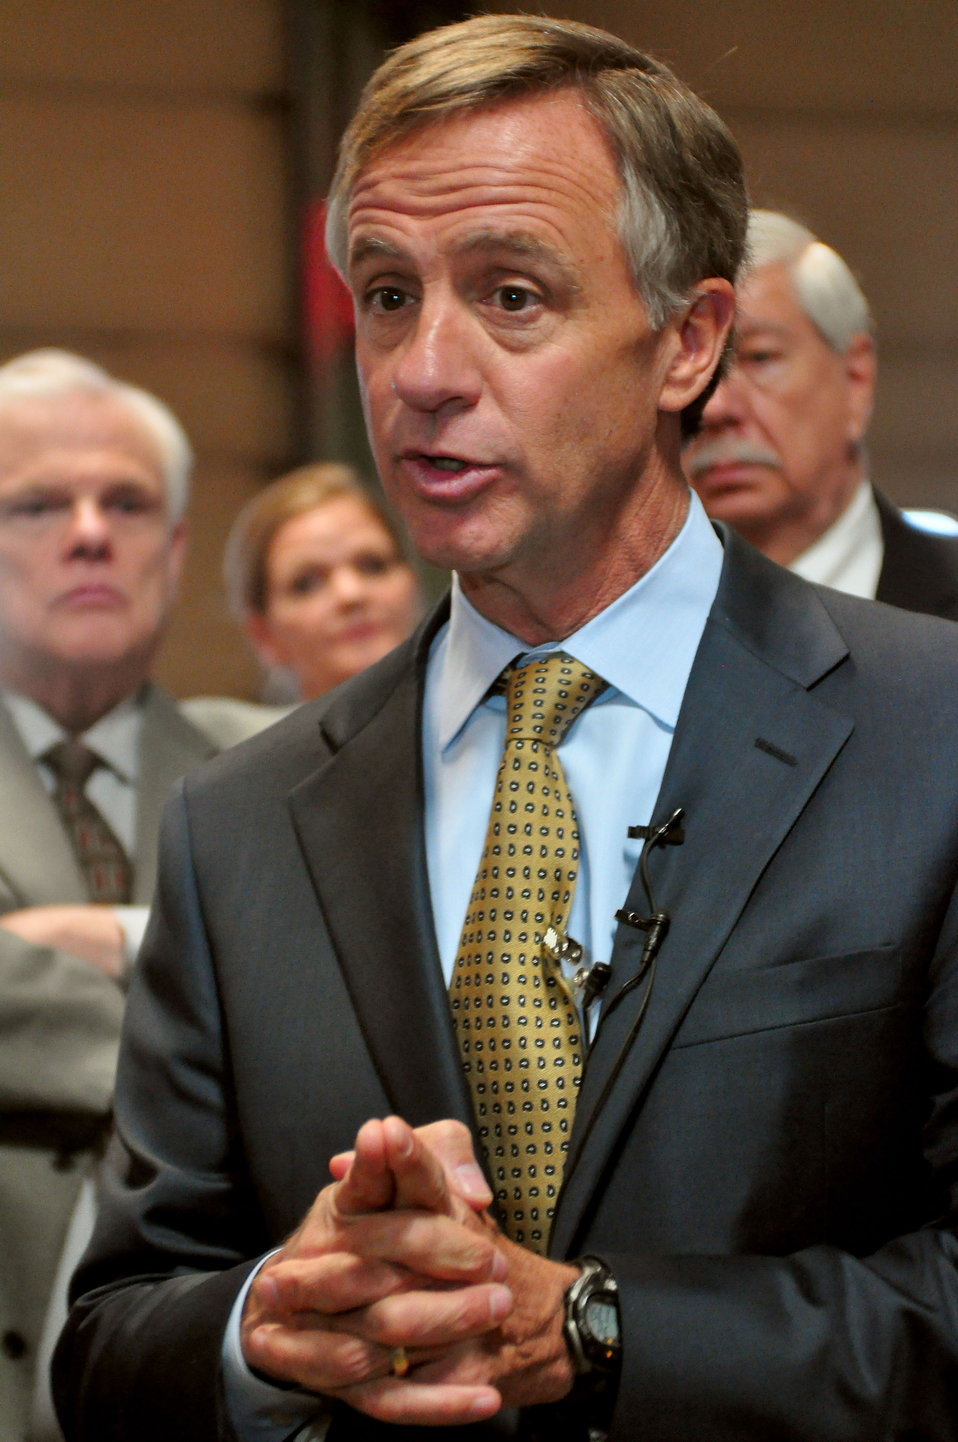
Gov. Bill Haslam Visit to ETTP 2014 Oak Ridge

14-037 DOE photo Lynn Freeny 3-21-2014 Oak Ridge Tennessee